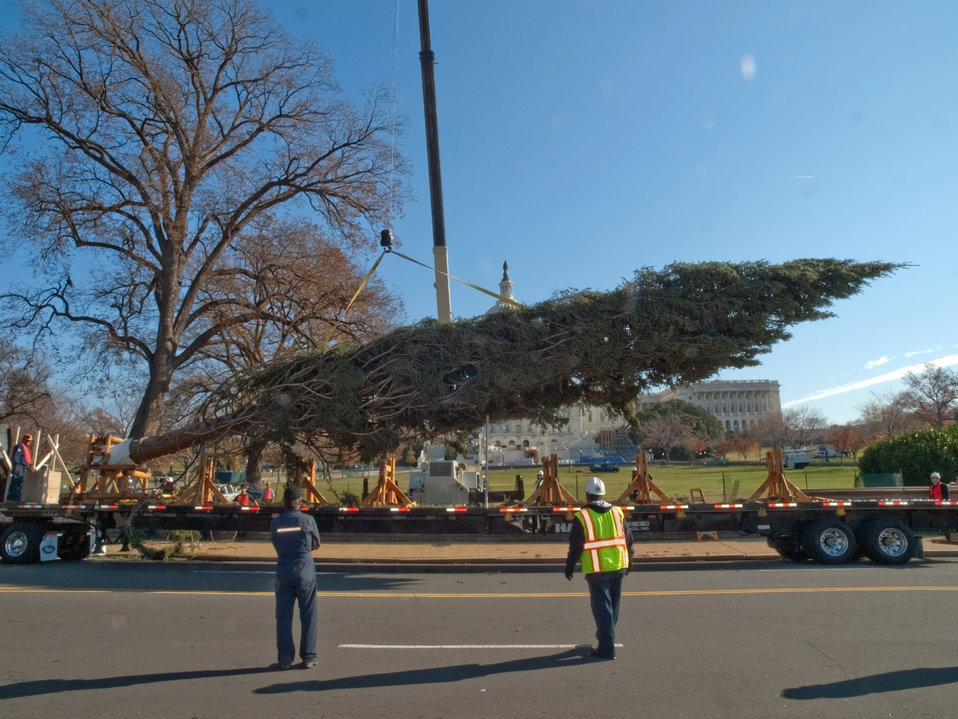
Members of the Capitol grounds crew move the 2012 Capitol Christmas Tree from its truck after it arrived in Washington, D.C. on Nov.26, 2012. The 73-foot Englemann spruce traveled from the White River National Forest in Colorado.